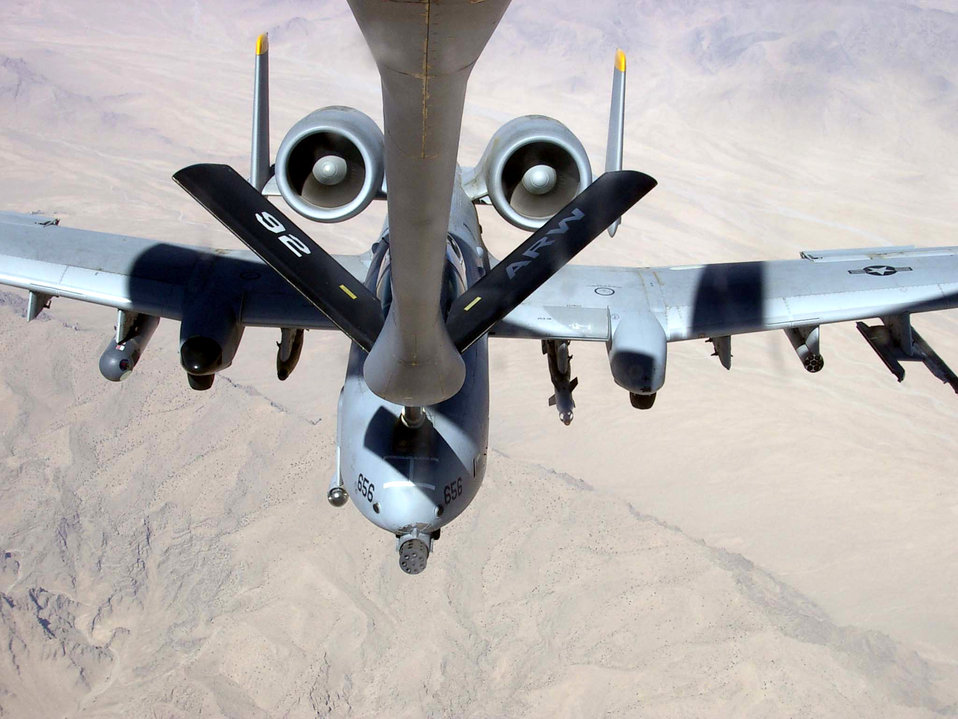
Refueling over Afghanistan

A KC-135 Stratotanker from the 22nd Expeditionary Air Refueling Squadron refuels an A-10 Thunderbolt II over Afghanistan. The 22nd EARS is part of the 376th Air Expeditionary Wing at Manas Air Base, Kyrgyzstan.